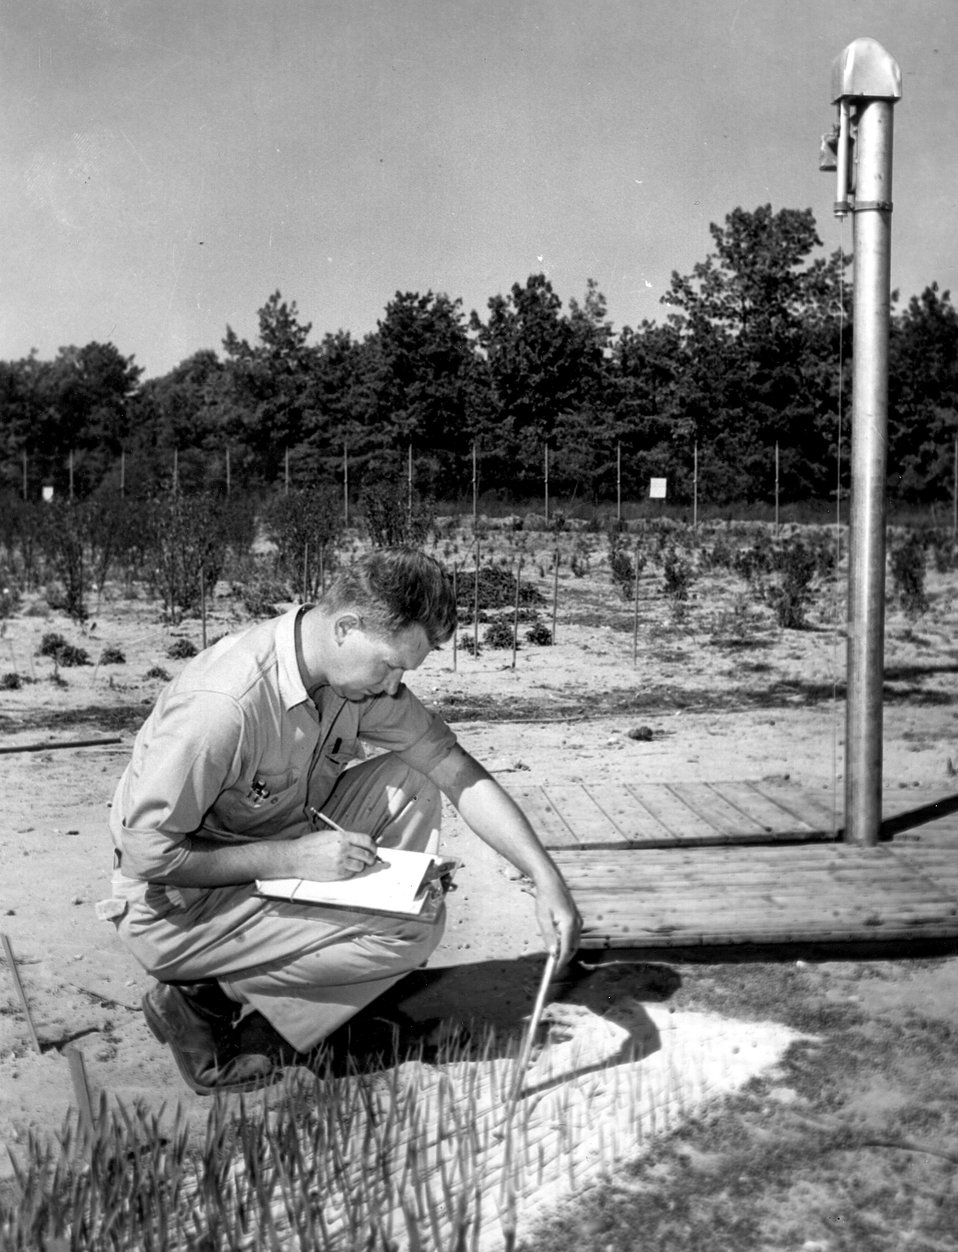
Center of the radiation field at Brookhaven National Laboratory. c. 1955